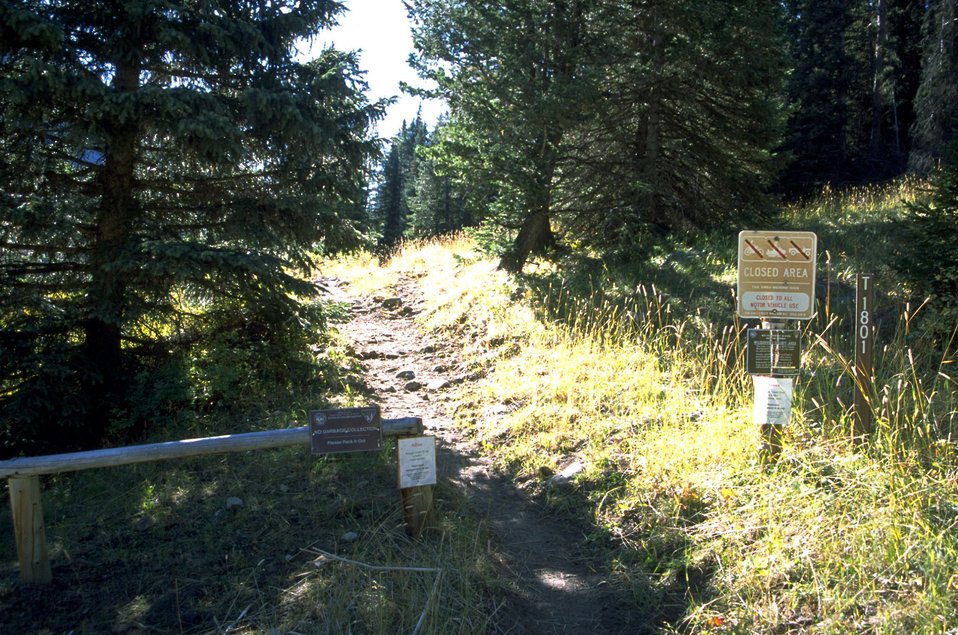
Closed Area sign at the trailhead